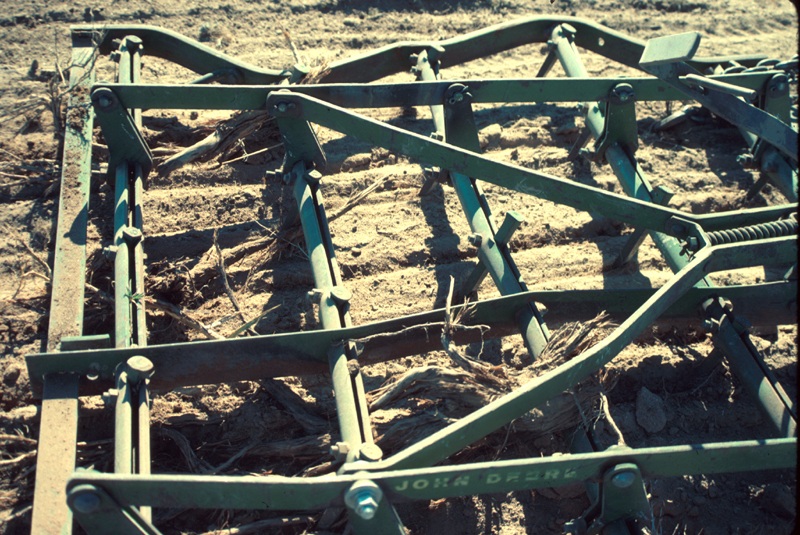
Orchard Harrow Range Restoration Project Lower Snake River District